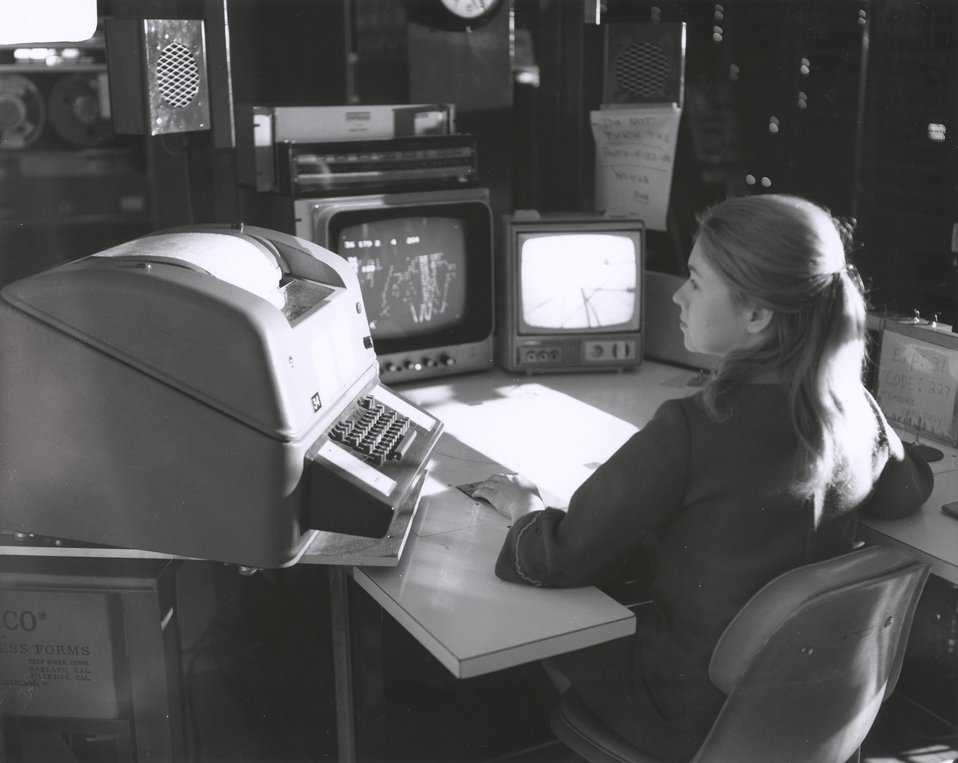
Silhouetted in the dim light cast by a Spiral Scanner, a technician reads the photographs showing the tracks left by particles in a bubble chamber. c. 1968